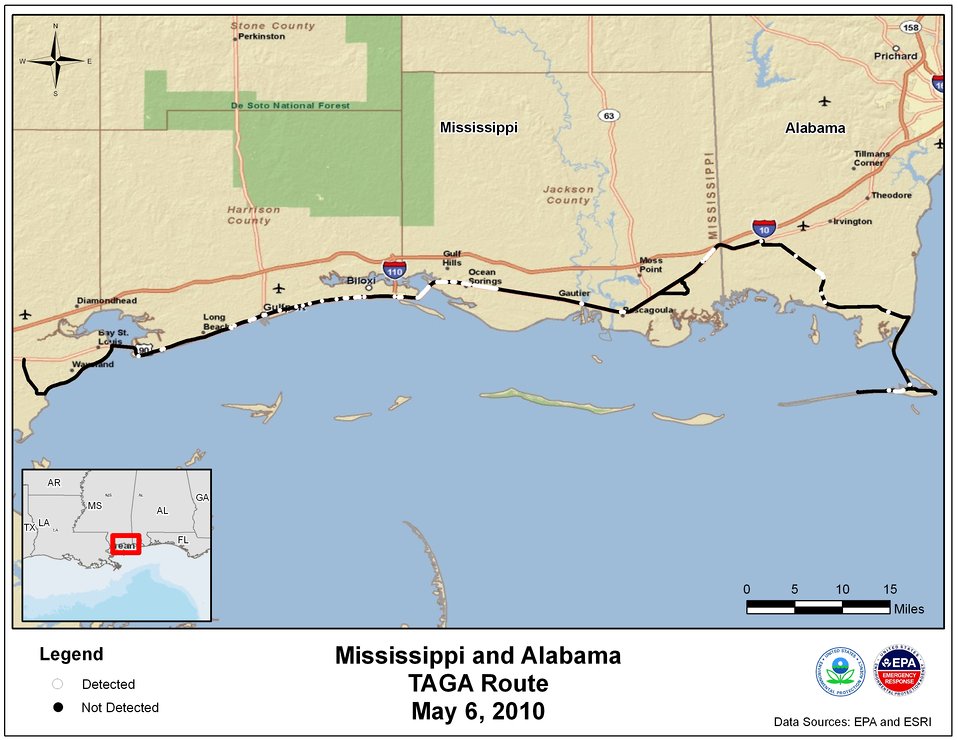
EPA TAGA Air Monitoring Locations May 6, 2010